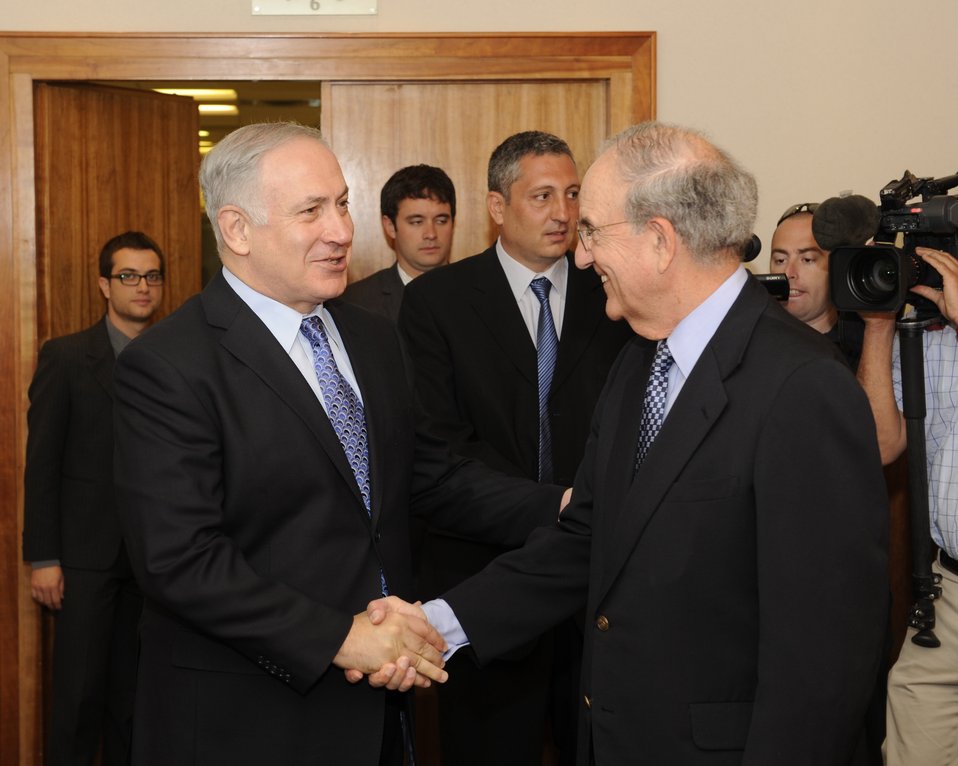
Special Envoy Mitchell Shakes Hands With Israeli Prime Minister Netanyahu

Special Envoy for Middle East Peace George Mitchell shakes hands with Israeli Prime Minister Binyamin Netanyahu at the Prime Minister’s office in Jerusalem on May 20, 2010.